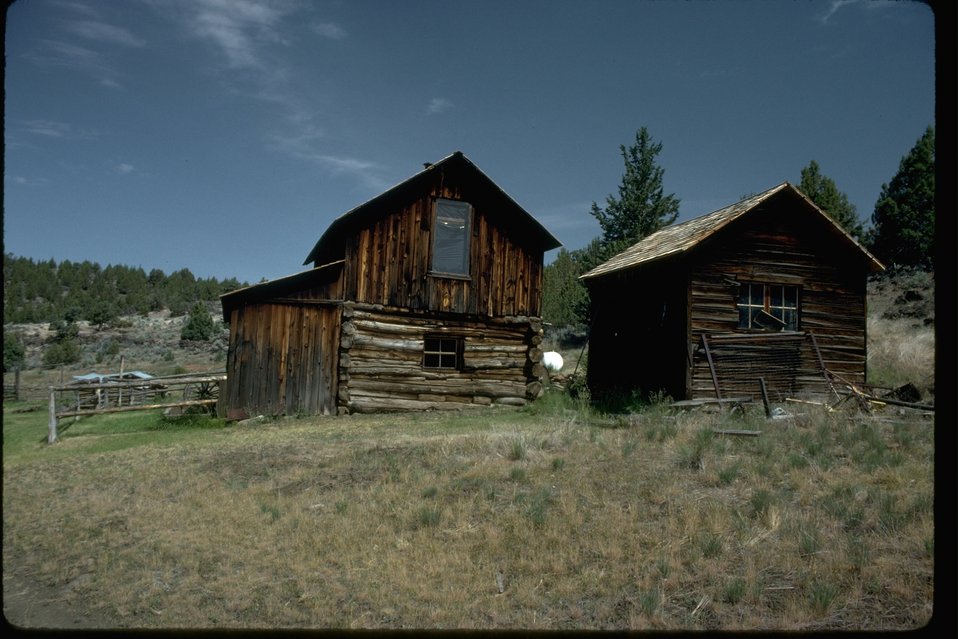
Fred Riddle House on the Riddle Brother's ranch located in the Historic District (National Register Site) on Steens Mountain, Oregon.